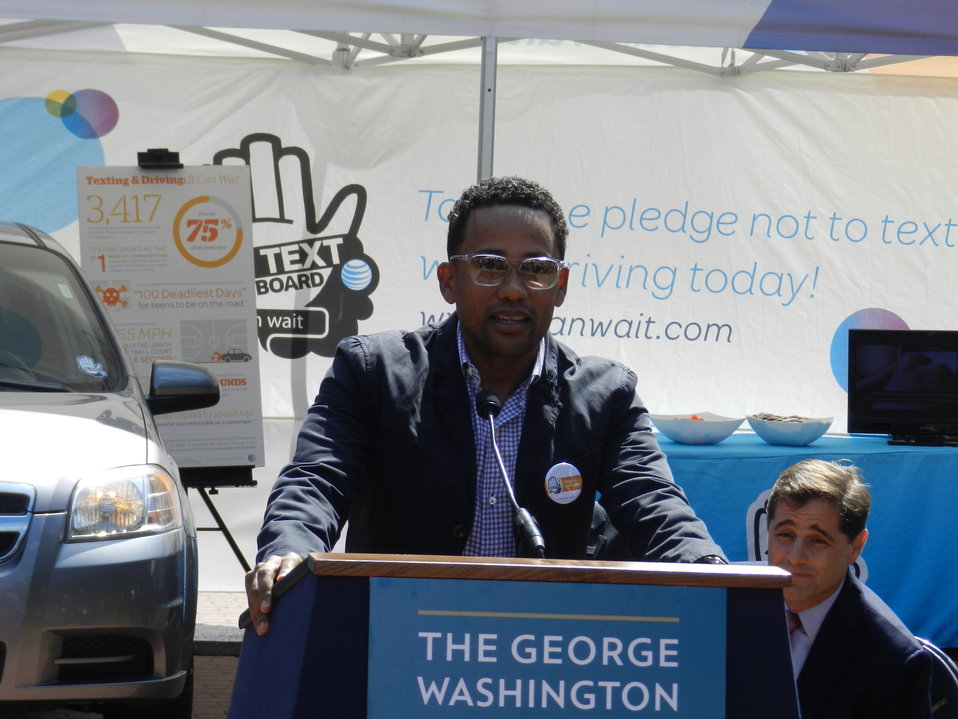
It Can Wait Pledge Day 9.19.12

Hill Harper, film, TV and stage actor, and author ~ Star of the hit show CSI: NY
speaking at the ‘No Text On Board’ Pledge Day Event, The George Washington University, Washington, D.C. September 19, 2012